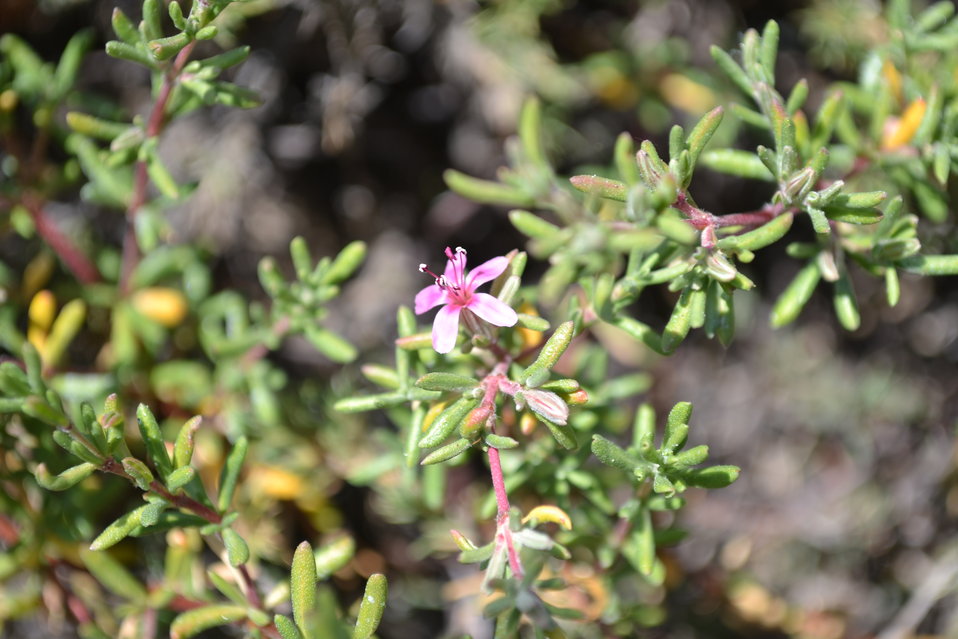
Alkali-heath (Frankenia salina) in bloom